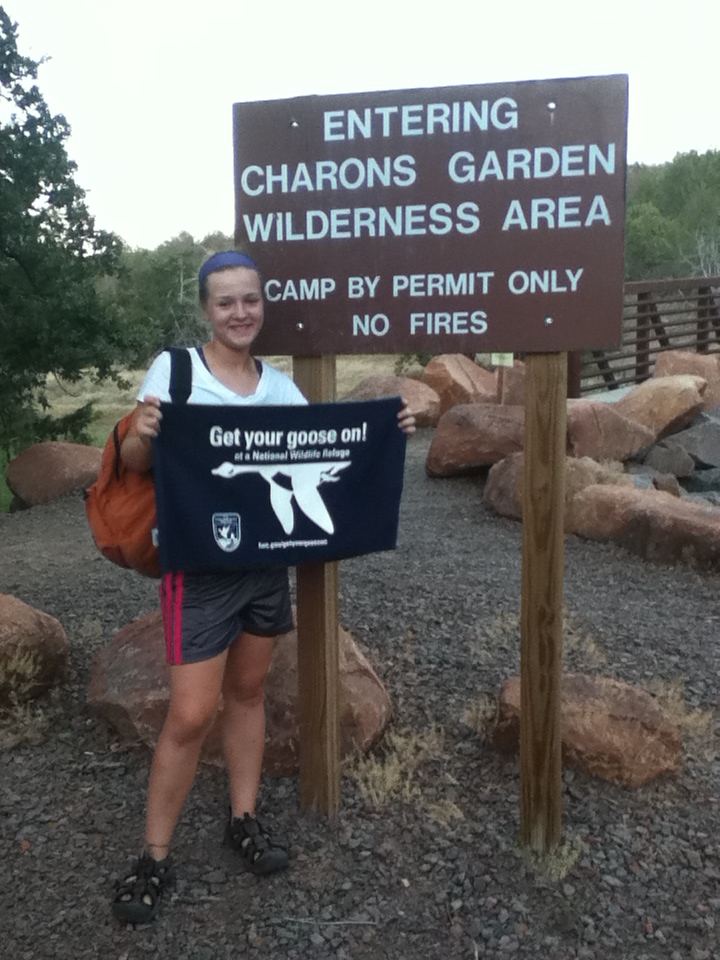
Get Your Goose On!

Wichita Mountains National Wildlife Refuge in Oklahoma.